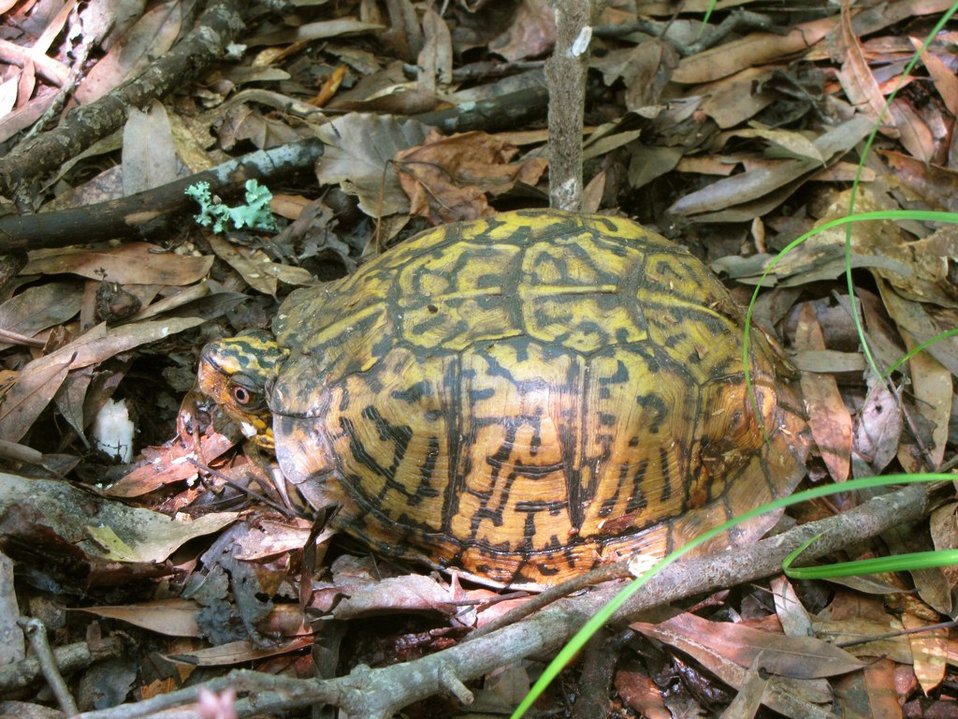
Mattaponi Wildlife Management Area, Virginia

Survey (June 27 - 28, 2012)

Eastern box turtle (Terrapene carolina carolina) eating a mushroom.